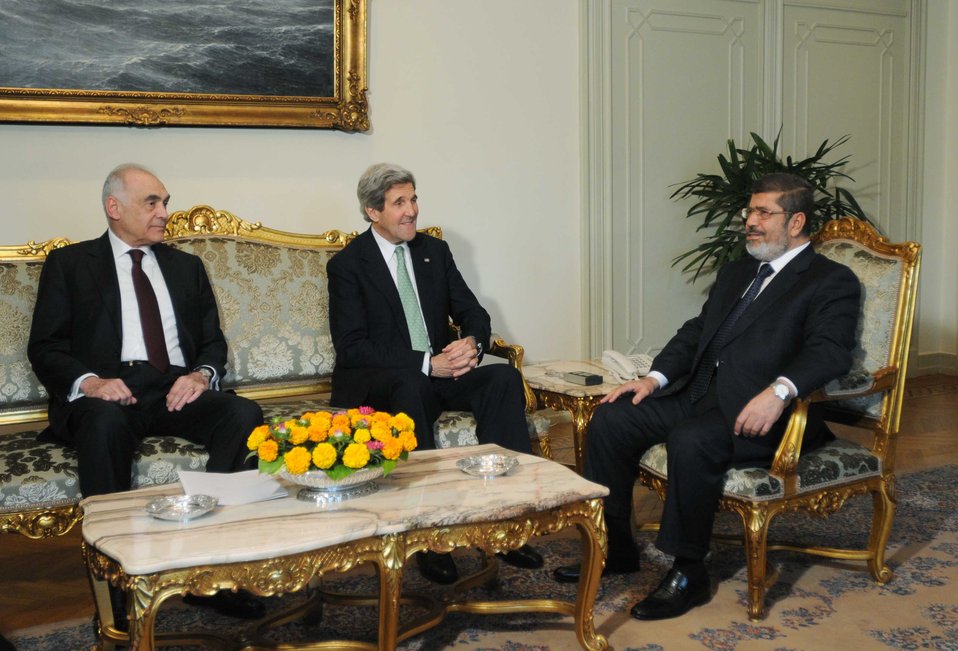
Secretary Kerry Meets With Egyptian President Morsy and Foreign Minister Amr

U.S. Secretary of State John Kerry meets with Egyptian President Mohammed Morsy and Egyptian Foreign Minister Mohamed Kamel Amr in Cairo, Egypt, on March 3, 2013.